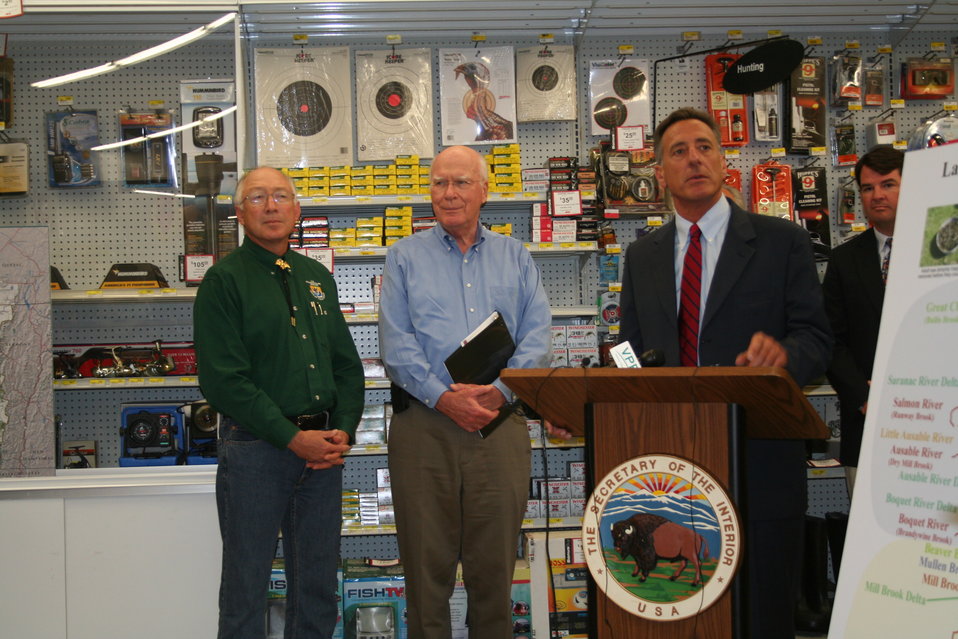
Secretary Salazar, Senator Leahy and Vermont Governor Shumlin

Department of Interior Secretary Salazar (left), Senator Leahy (VT, center), and Vermont Governor Shumlin (right) discuss sea lamprey control program.